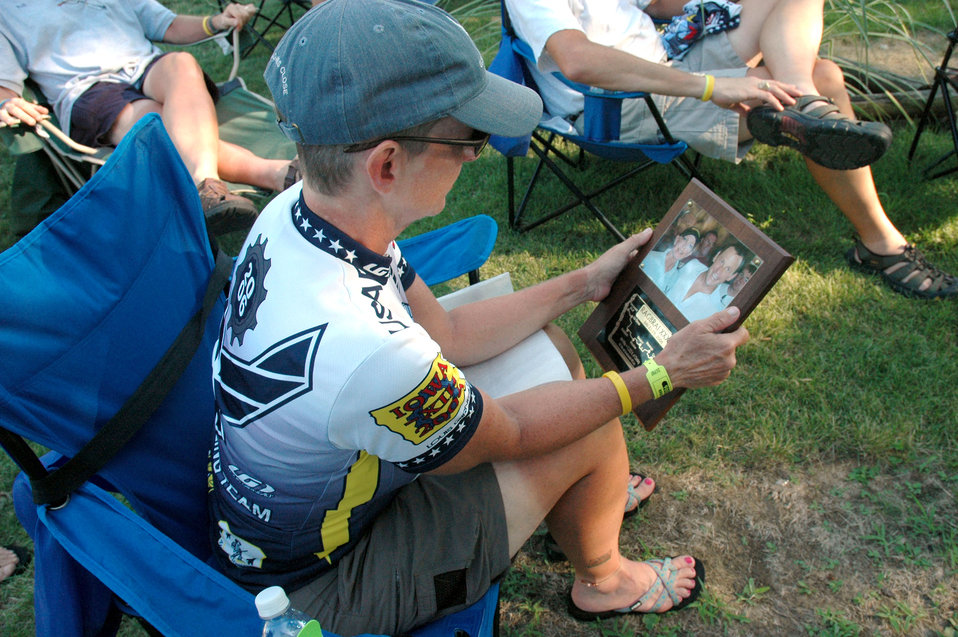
Cancer doesn't stop Air Force cyclists from crossing Iowa

Pamela Vineyard, an ovarian cancer patient, underwent chemotherapy February through April and came back to train for the more than 450-mile ride across the state of Iowa. She met her hero, Lance Armstrong, at a reception in his honor July 27.